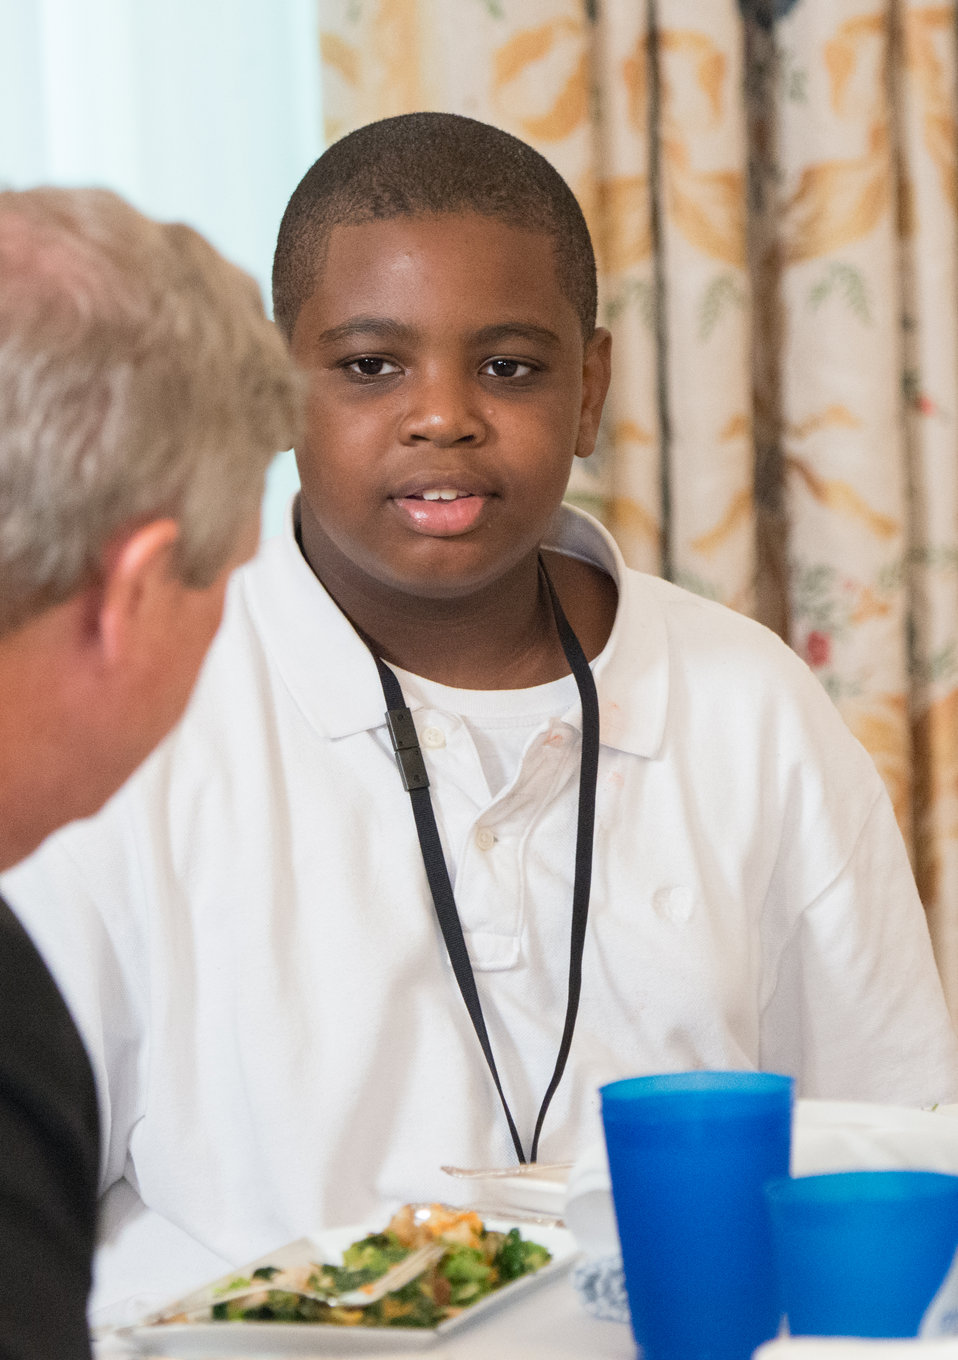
Agriculture Secretary Tom Vilsack speaks to Washington, D.C. student in the State Dining Room of the White House in Washington, D.C. on Thursday, Jun. 12, 2014. The student, who helped plant the garden in the spring, made lunch from this year’s summer crop with the help of White House chefs and visiting school nutrition directors from Orlando, FL, Dallas, TX, and West Virginia USDA photo by Lance Cheung.